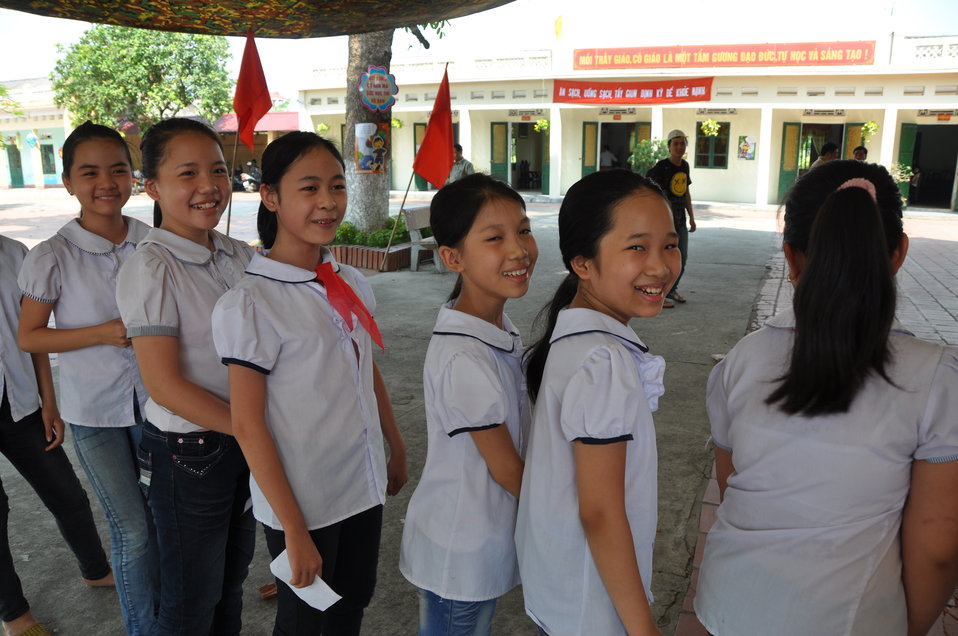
USAID supports deworming education and medication distribution in Bac Giang Province

May 20, 2013